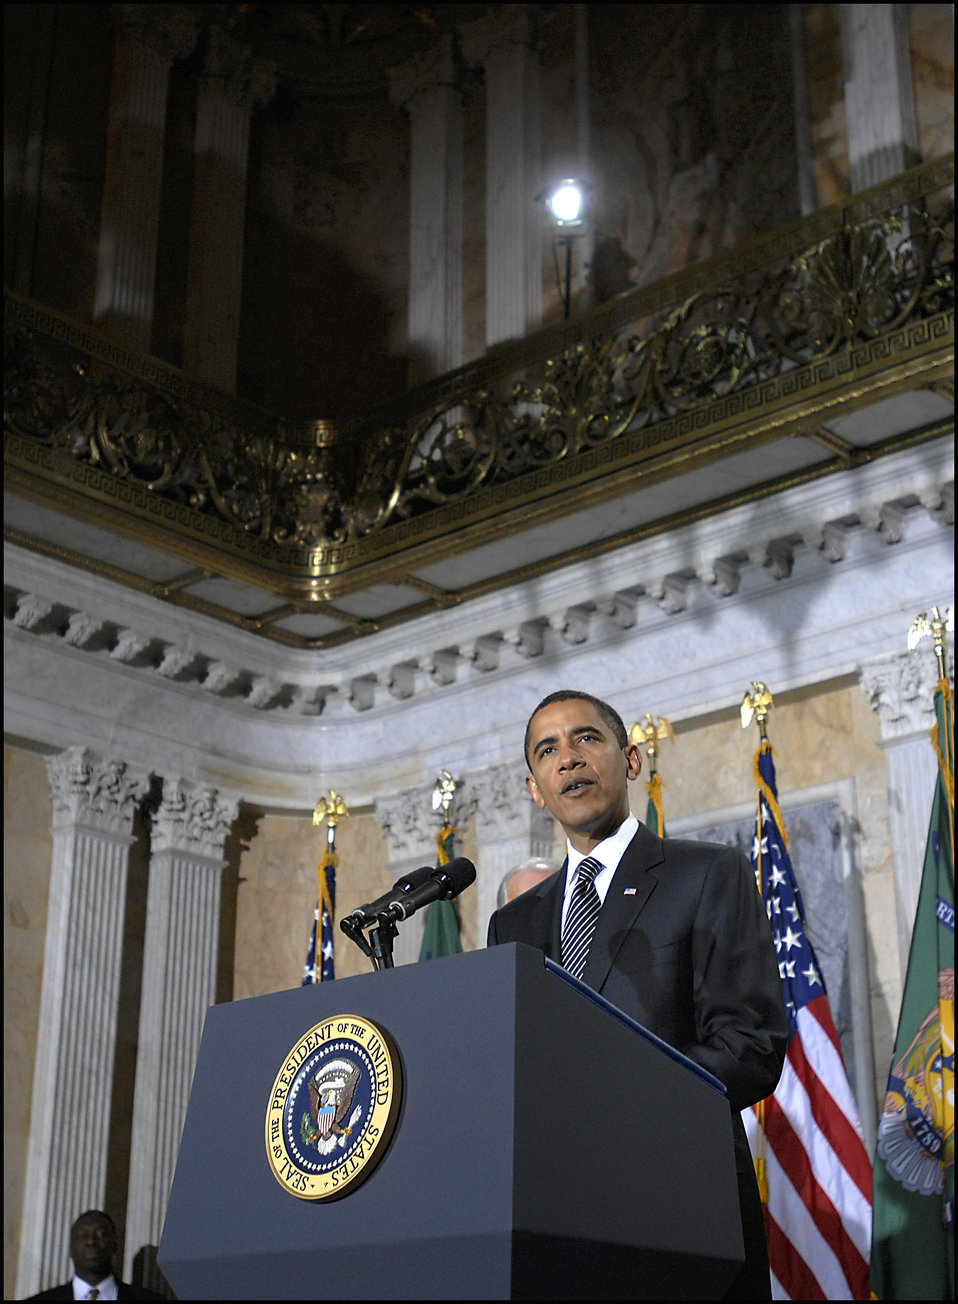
President Obama at Secretary Geithner's swearing-in

President Barack Obama speaking at Secretary Geithner’s swearing in ceremony on January 26, 2009.